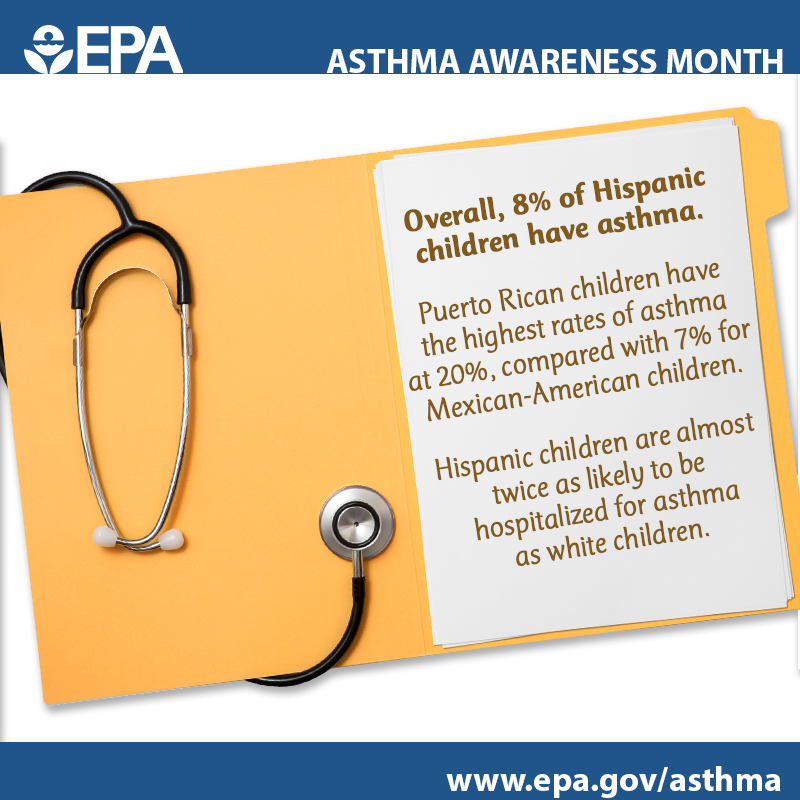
1 in 12 Hispanic kids has asthma

Asthma doesn’t affect us all equally. Overall, 8% of Hispanic children have asthma and they’re almost twice as likely to be hospitalized for it as white kids. Puerto Rican children have the highest rate of asthma at 20%, compared with 7% for Mexican-American children.